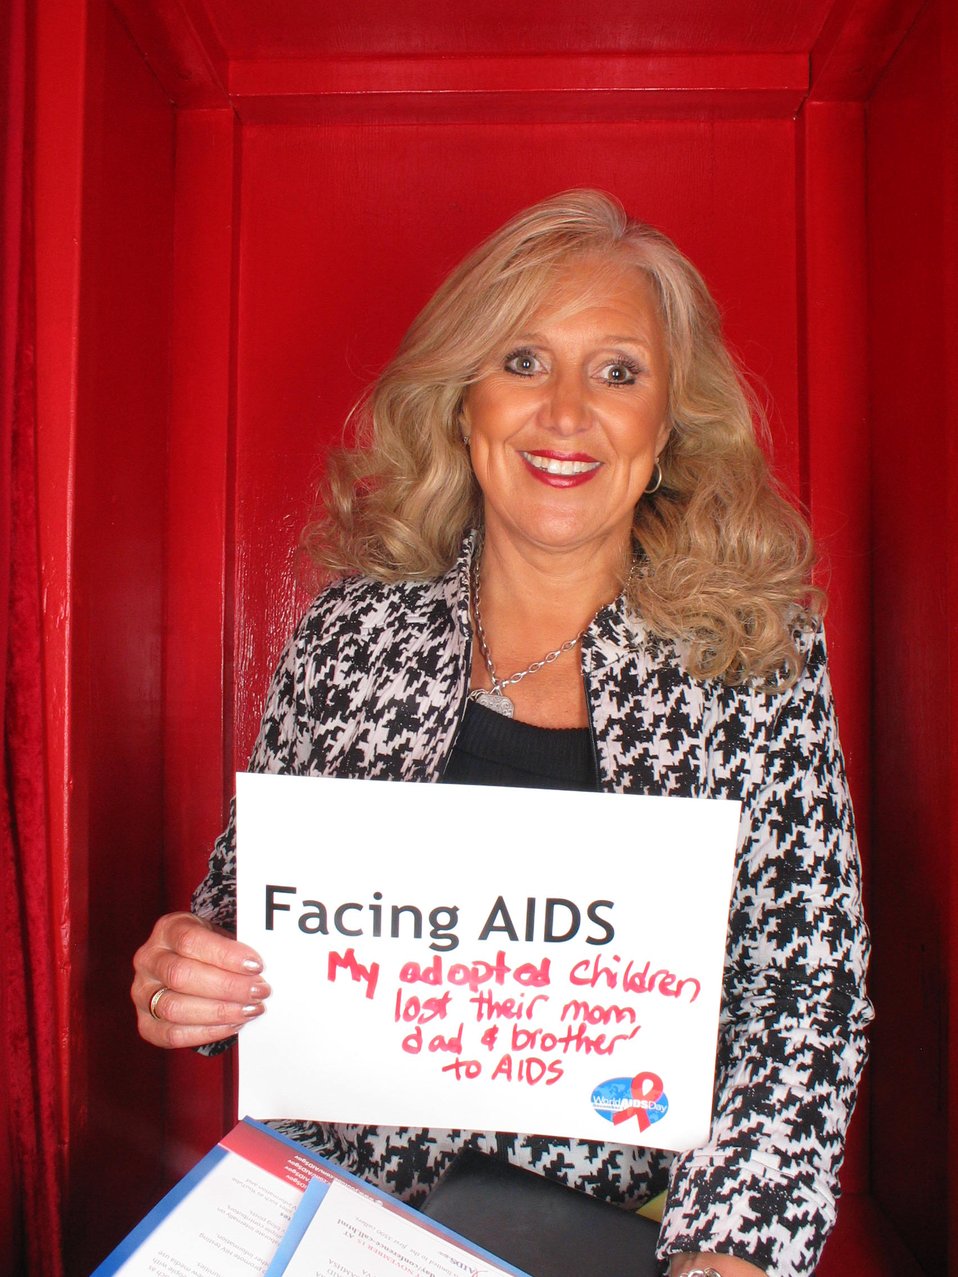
Facing AIDS My adopted children lost their mother, dad and brother to AIDS.